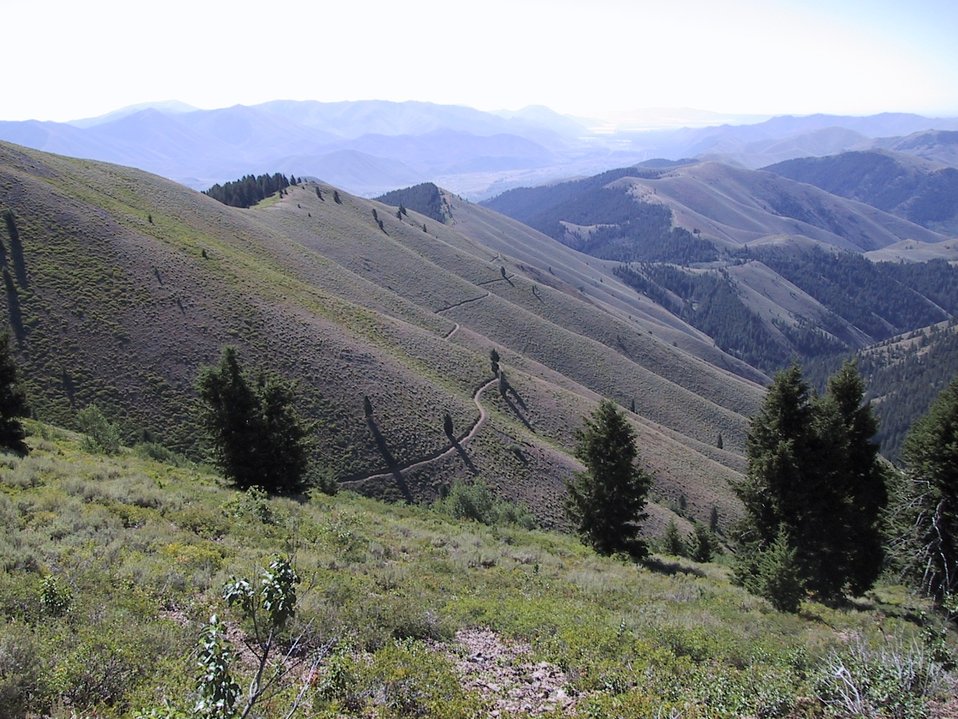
Blaine County Trails Shoshone Field Office USRD Upper Snake River District